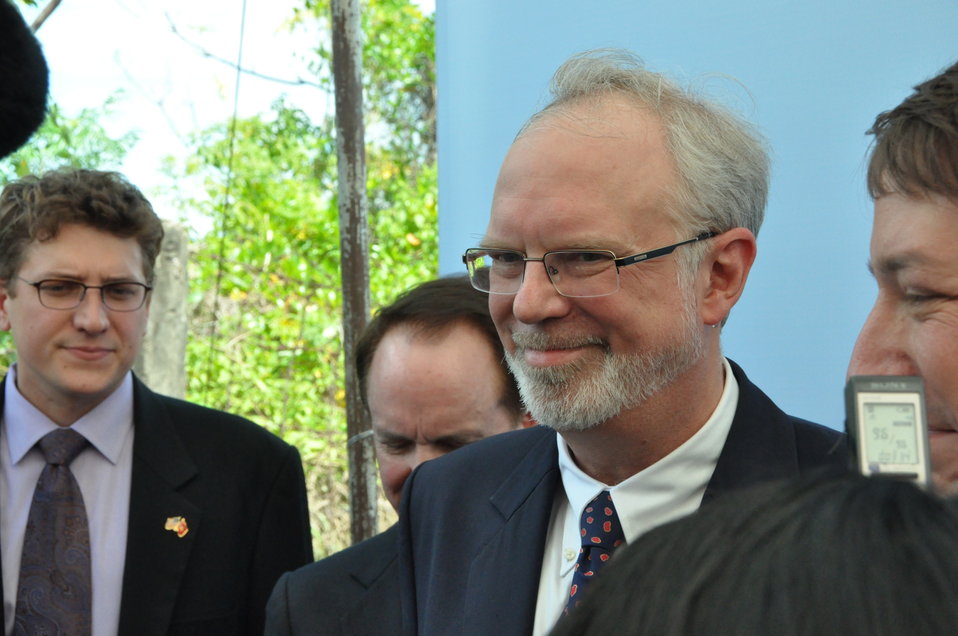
U.S. Ambassador David B. Shear meets the press at the Environmental Remediation of Dioxin Contamination at Danang Airport Project Launch

Danang, August 9, 2012